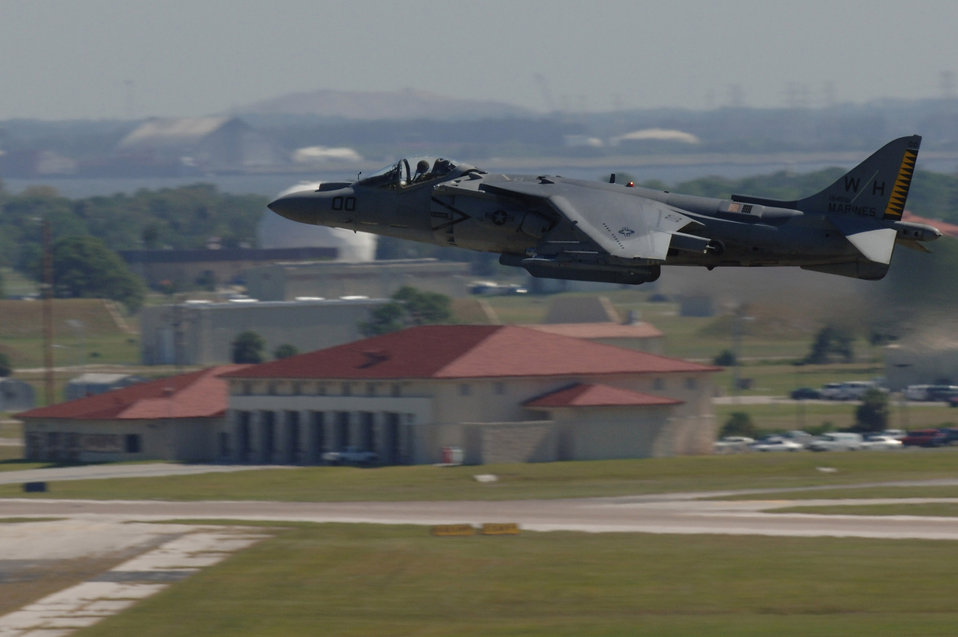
Crews sharpen skills at Atlantic Strike

A Marine AV-8 Harrier takes off from MacDill Air Force Base, Fla., for an Atlantic Strike exercise mission Oct. 24. The fighter, from Marine Corps Air Station Cherry Point, N.C., was at MacDill for the U.S. Central Command bi-annual Atlantic Strike training event. Through realistic close-air support training, Atlantic Strike is designed to better prepare aircrews and Air Force joint tactical air controllers for deployments.